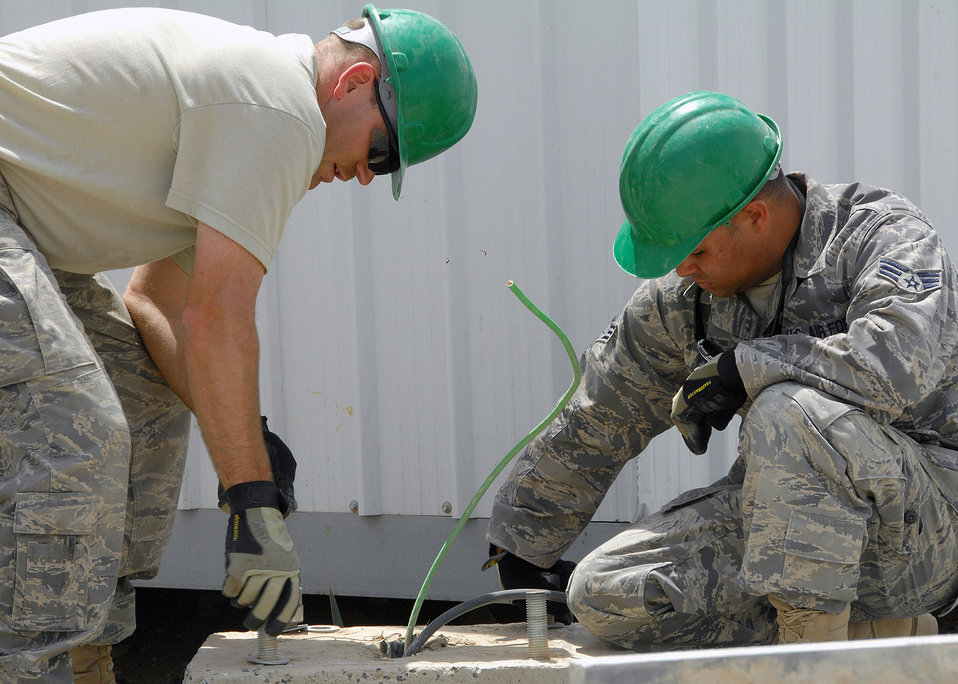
Keeping the lights on

Staff Sgt. Ricky Clark and Senior Airman Jose Lozadacosme tighten down bolts on the base of a light pole on Aug. 23 at an air base in Southwest Asia. They are assigned to the 386th Expeditionary Civil Engineer Squadron.